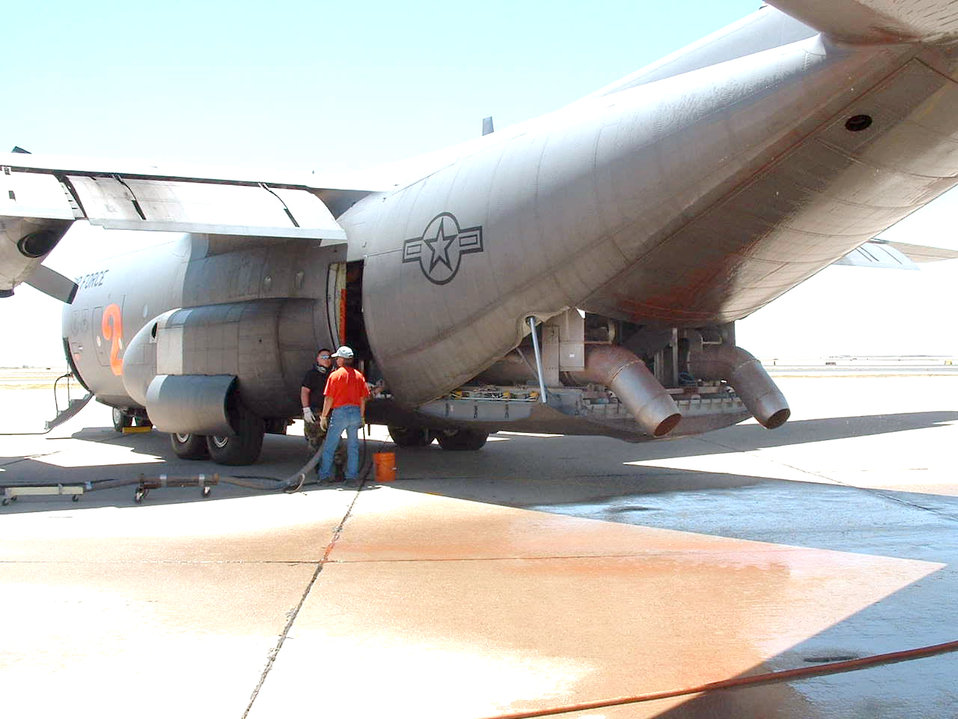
Air Force fighting fires at home

KIRTLAND AIR FORCE BASE, N.M. -- A C-130 Hercules is equipped with the modular airborne fire fighting system used to disperse chemical fire retardants over wildfires. The equipment is owned by the U.S. Forest Service, but Air National Guard and Reserve units maintain and install the equipment when needed to fight fires.